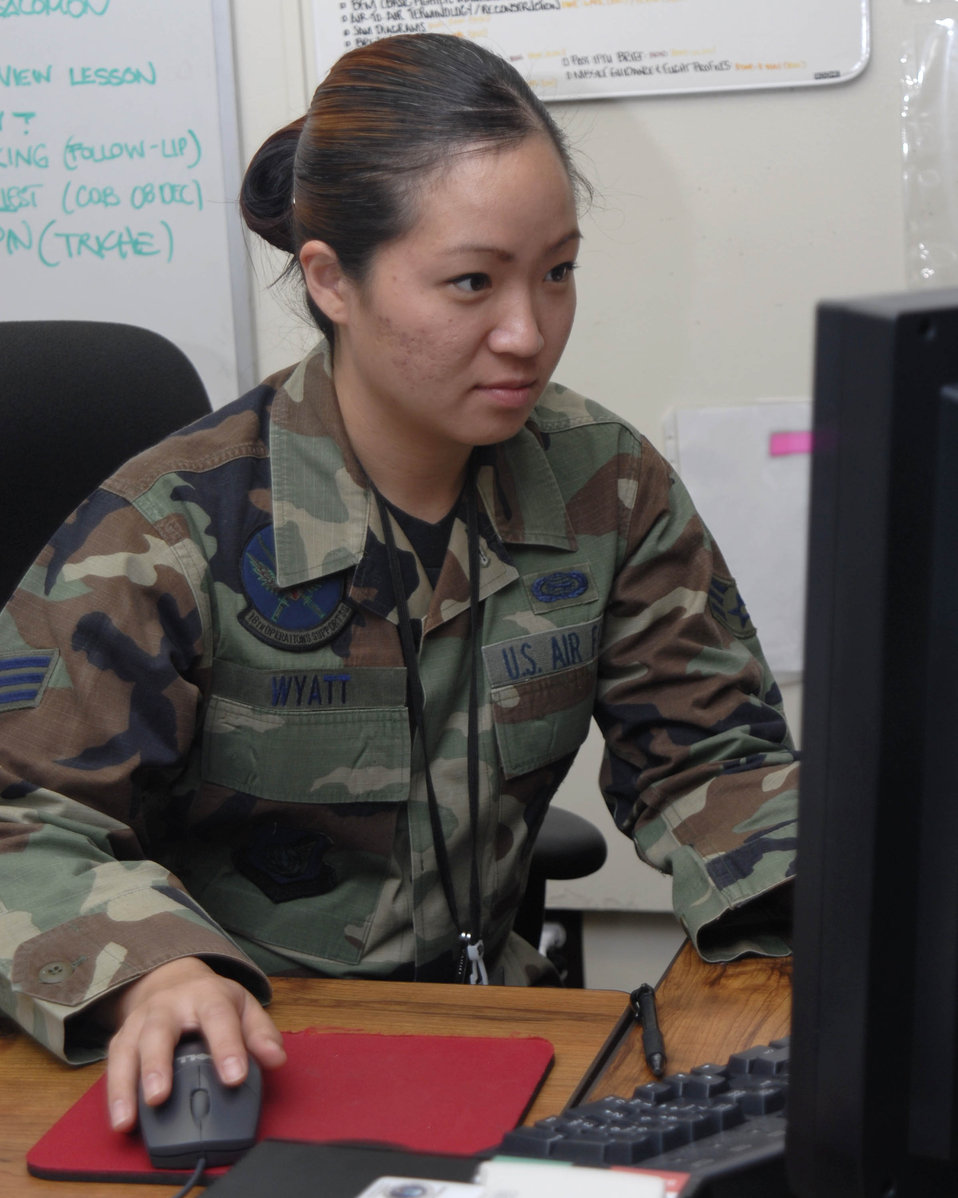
Serving through the season: Senior Airman Jane Min-Hee Wyatt

Senior Airman Jane Min-Hee Wyatt, 18th Operations Support Squadron intelligence analyst, reviews intelligence data at Kadena Air Base, Japan. Airman Wyatt is preparing to deploy to Iraq and is serving during this holiday season.